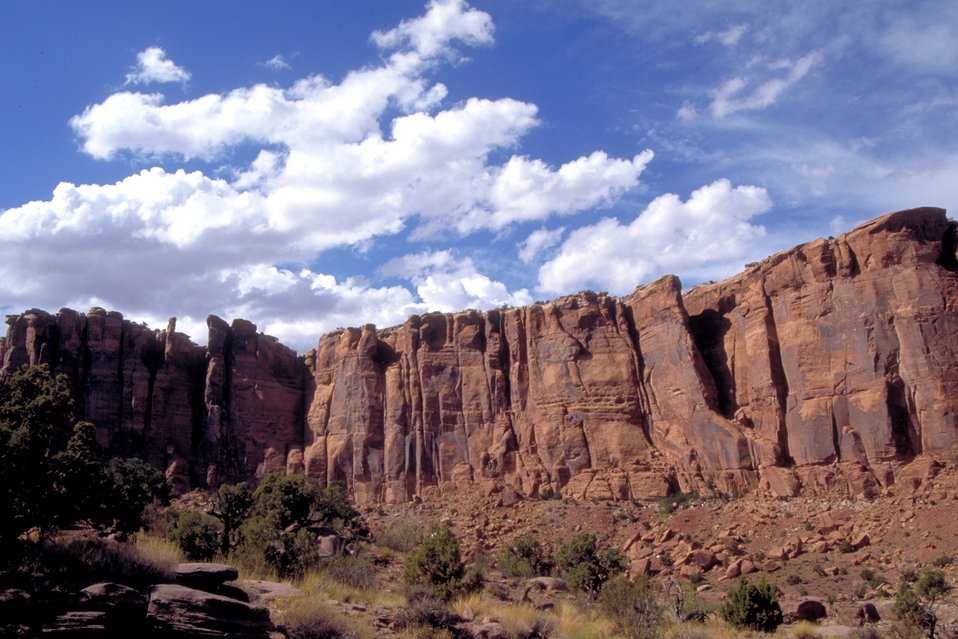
Canyon rim slickrock with clouds near Moab, Utah.